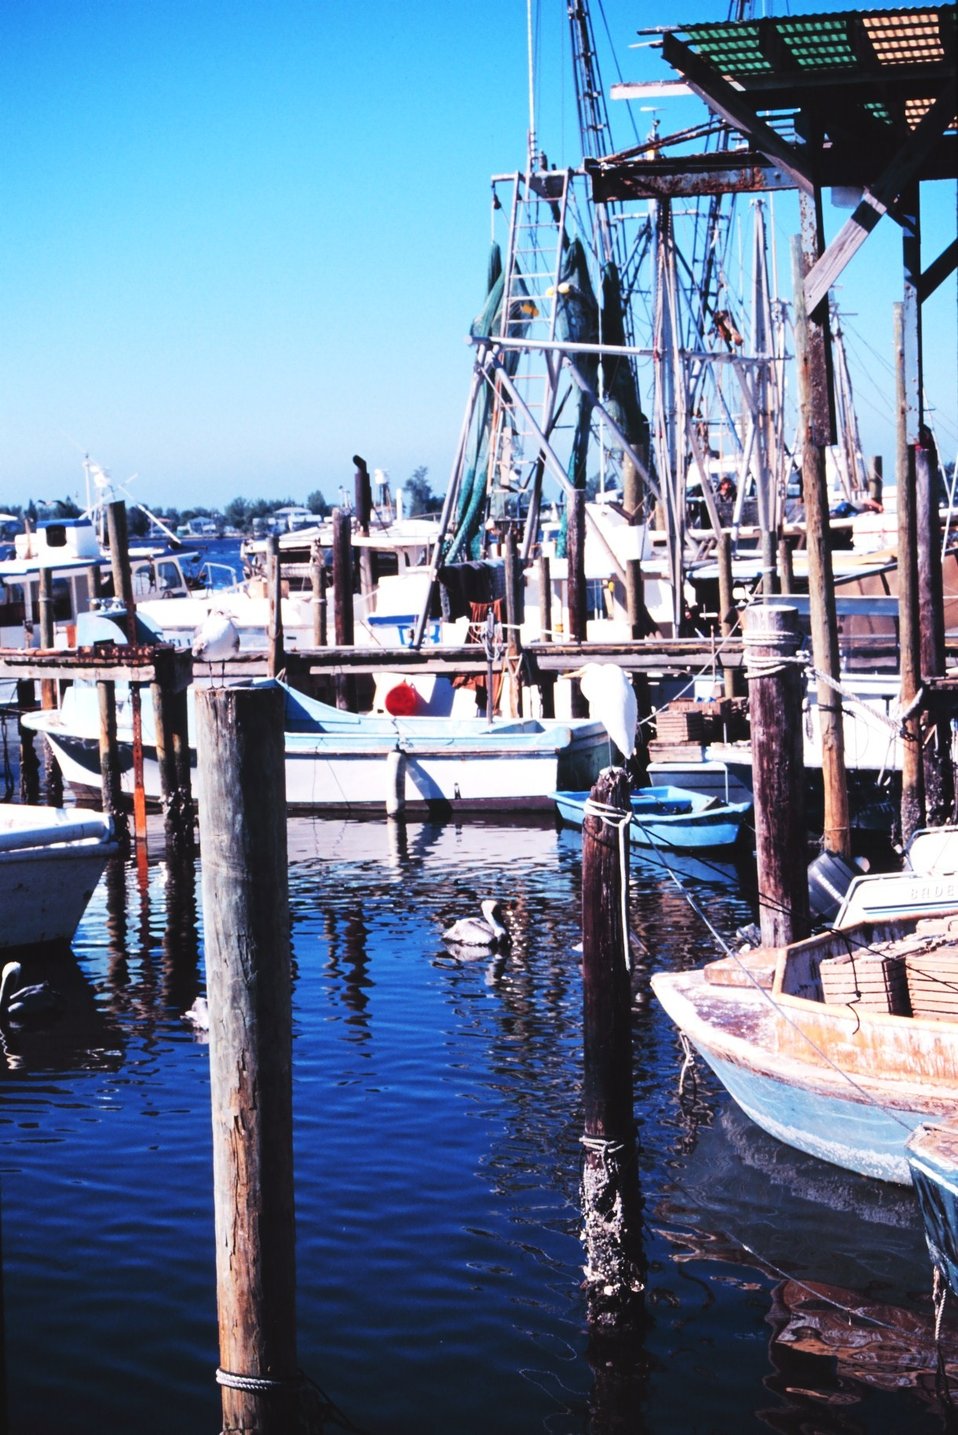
Shrimp, snapper, grouper, and stone crab fishing boats at A. P. Bell Fish Co.